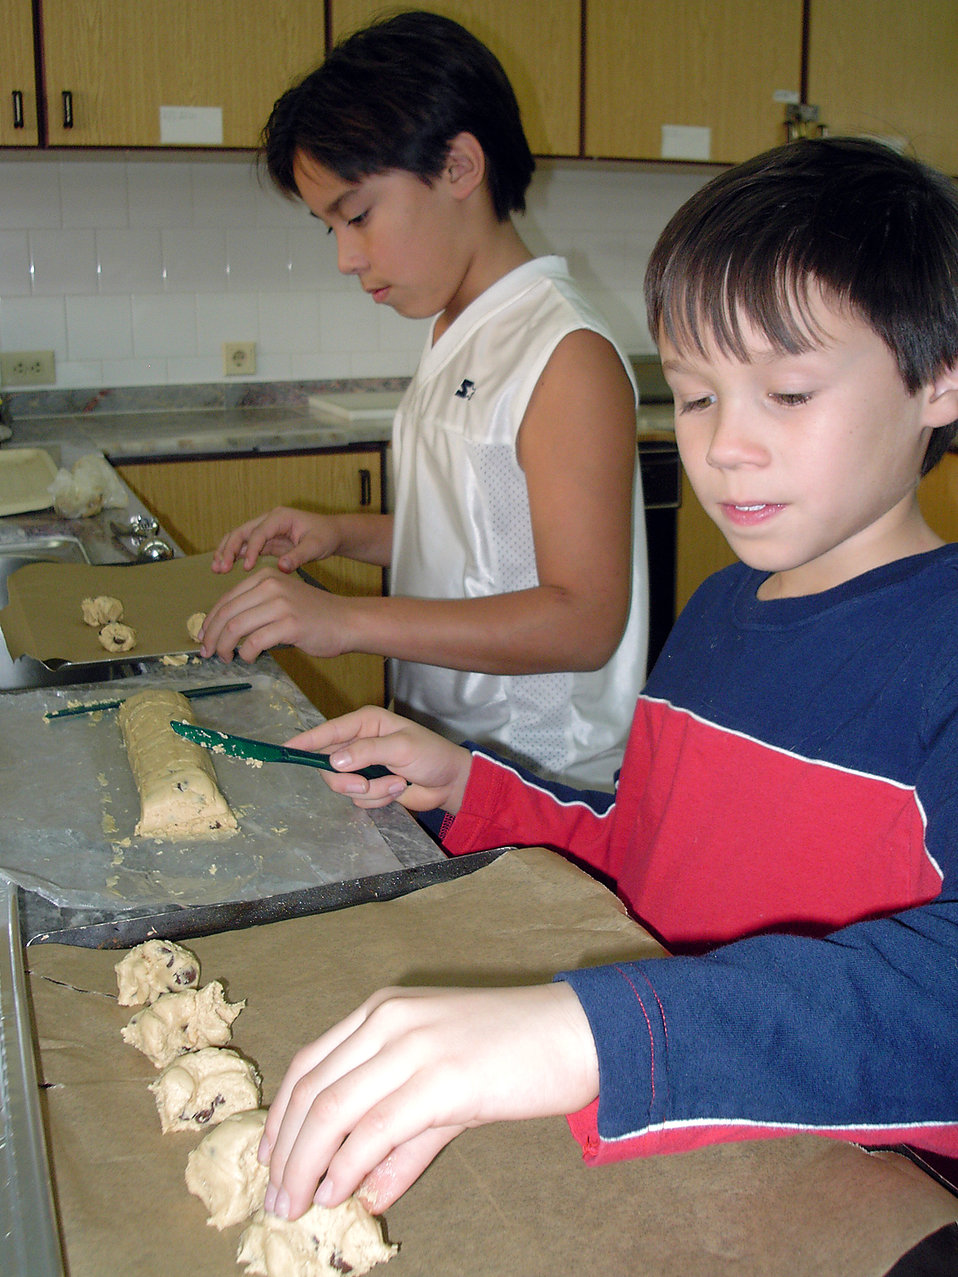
Bakin' cookies

INCIRLIK AIR BASE, Turkey -- Dominic (left) and Jeremy Gonzaga, ages 11 and 9, make chocolate chip cookies for Operation C.H.I.P. (Cookies Help Incirlik Personnel). The goal of the operation is to give every permanent-party and deployed unaccompanied airman a bag of home-baked cookies.